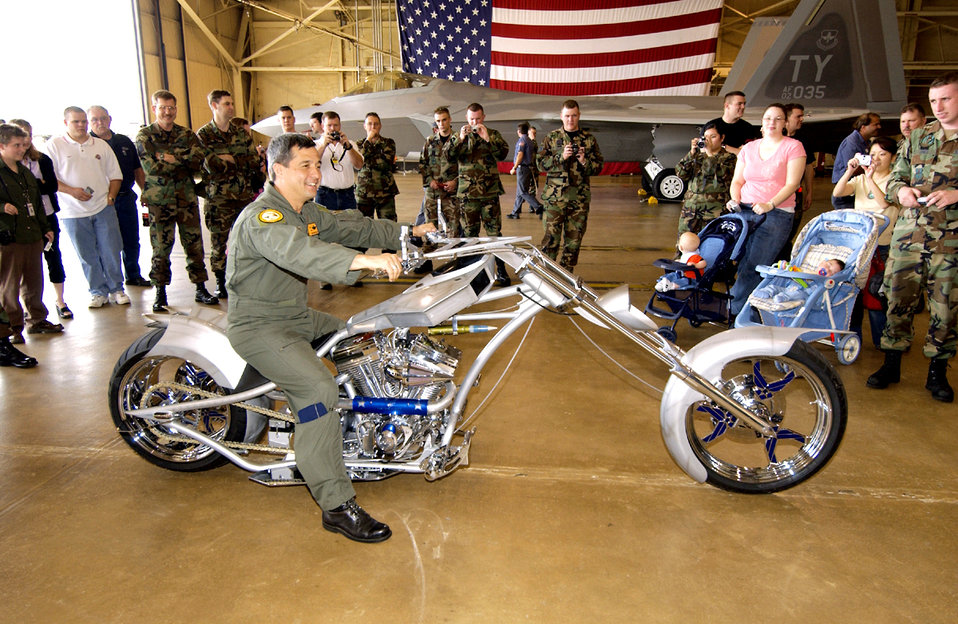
But will it fly?

TYNDALL AIR FORCE BASE, Fla. -- Col. Brian Dickerson sits astride the Air Force Chopper. The motorcycle made its Air Force debut here recently. The 10-foot-long bike was modeled after the F/A-22 Raptor, complete with Air Force symbol rims, riveted gas tank, Raptor exhausts and rear view mirrors in the shape of jets. It will be used at recruiting venues to draw awareness to special events displays and aid in recruiting efforts, said Air Force Recruiting Service officials at Randolph Air Force Base, Texas. Colonel Dickerson is vice commander of the 325th Fighter Wing here. The motorcycle was built by Orange County Choppers Inc., in Rock Tavern, N.Y.